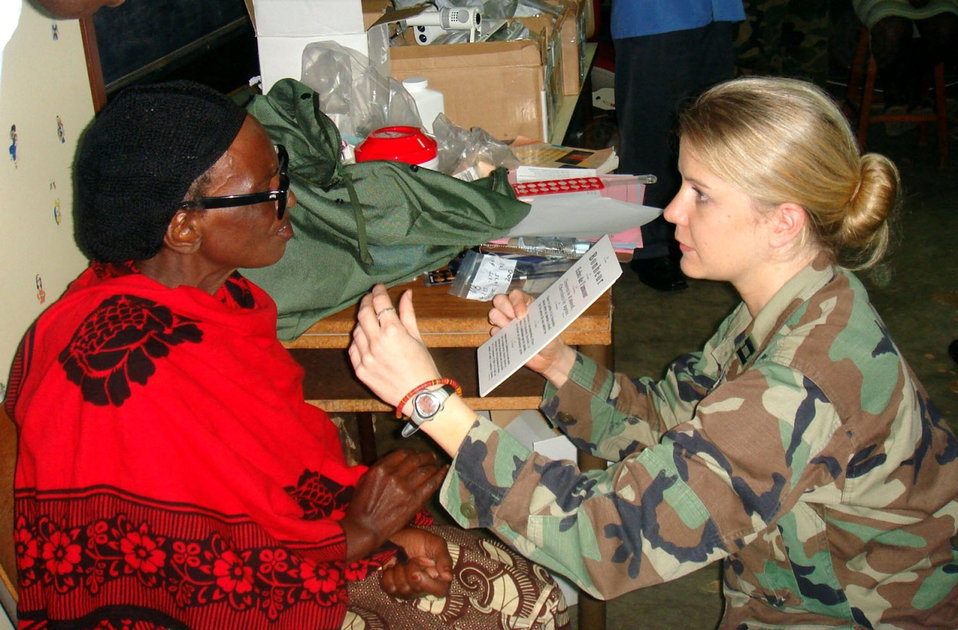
Medical team treats nearly 1,500 African patients

Capt. Christie Barton examines a Rwandan woman during a medical capabilities mission that five medics from around the U.S. European Command participated in recently. The group from Aviano Air Base, Italy, and Ramstein AB, Germany, performed eye and dental exams for nearly 1,500 people, and in conjunction with the Rwandan Military Defense Force and the International Red Cross, they held medical seminars for 50 local doctors as part of the two-week military-to-military operation. Captain Barton is an optometrist from the 435th Medical Group at Ramstein AB.